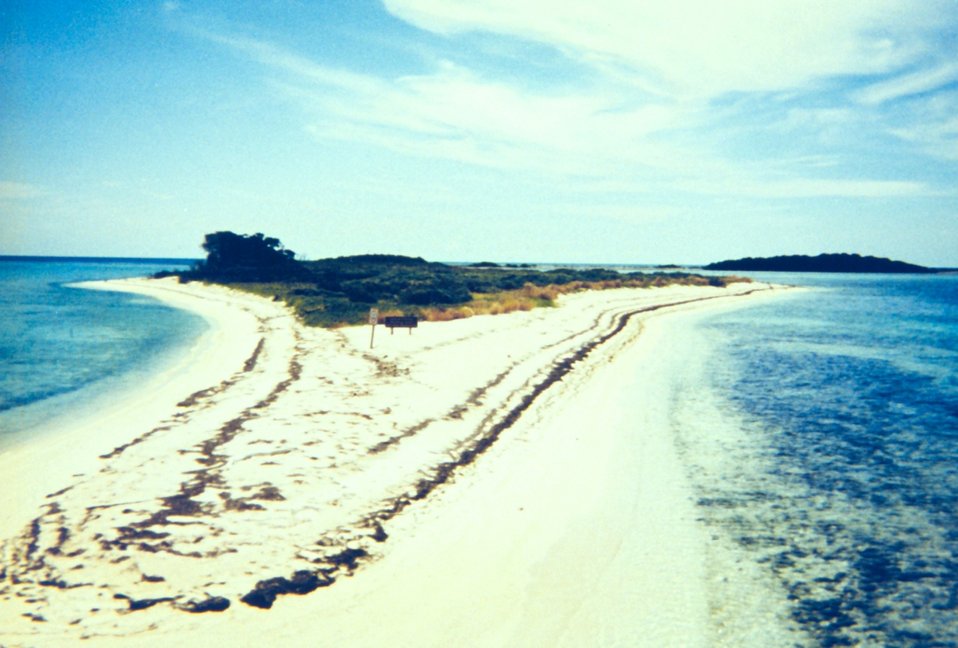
The bird refuge adjacent to Fort Jefferson.